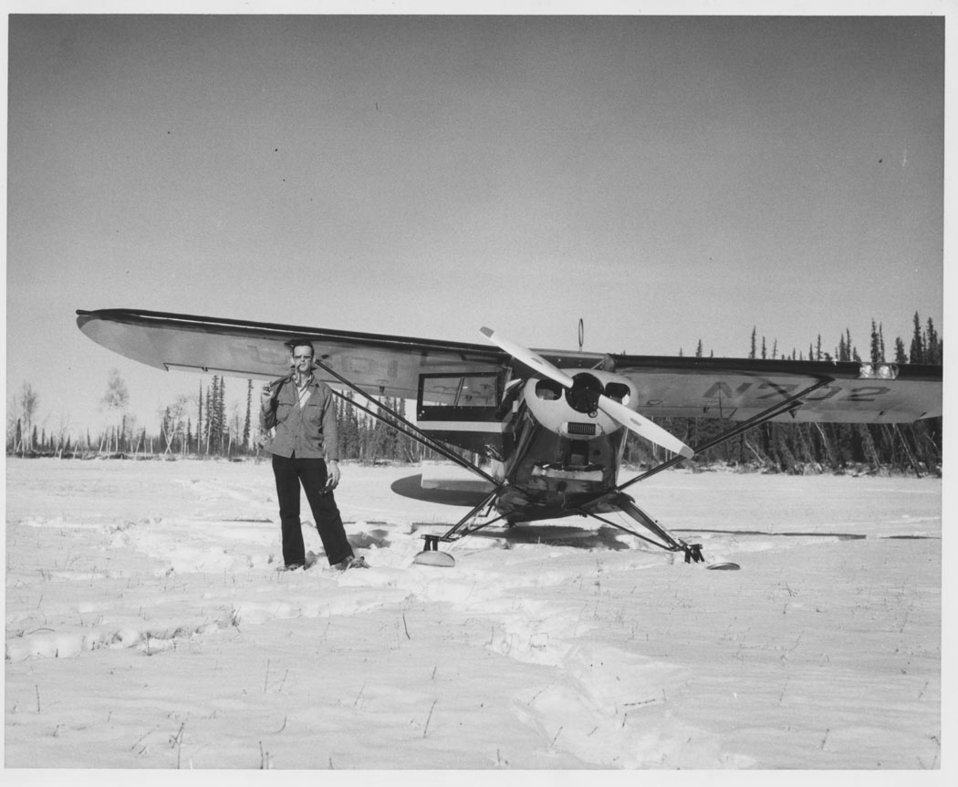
Agent Jim King and small plane N702

Agent King with axe over shoulder prepares to walk to an illegal beaver set about 1/2 mile in background. N702 airplane. 20 miles SW Galena, Alaska, April 1954. Jim King Collection